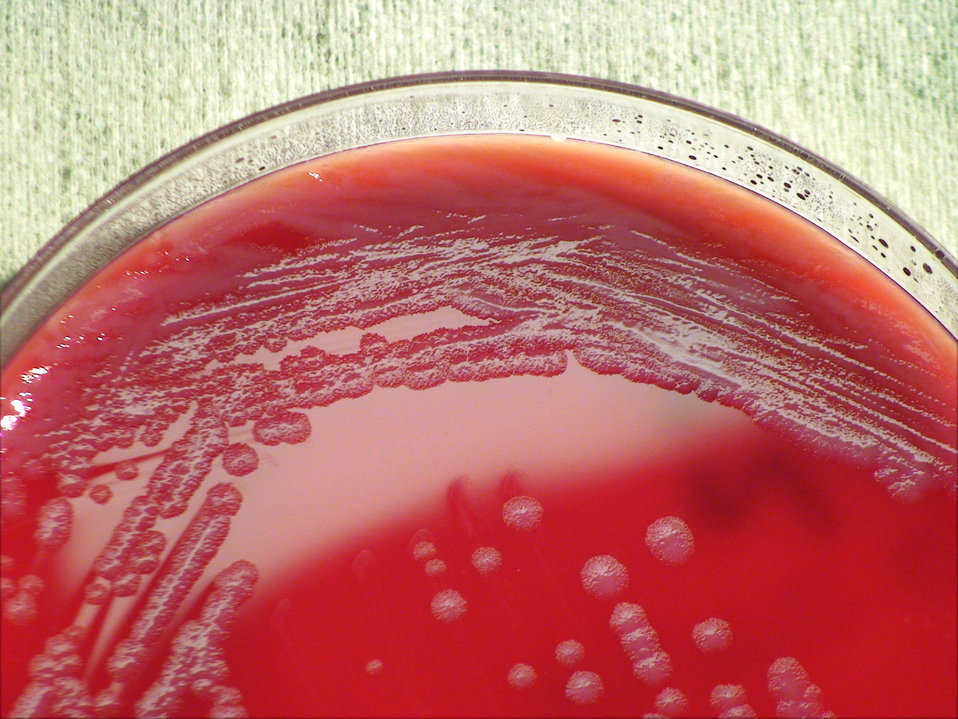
As a closer view of PHIL 12381, this photograph depicts the colonial morphology displayed by Gram-positive Bacillus licheniformis bacteria, which was grown on a medium of sheep's blood agar (SBA), for a 24 hour time period, at a temperature of 37�C.